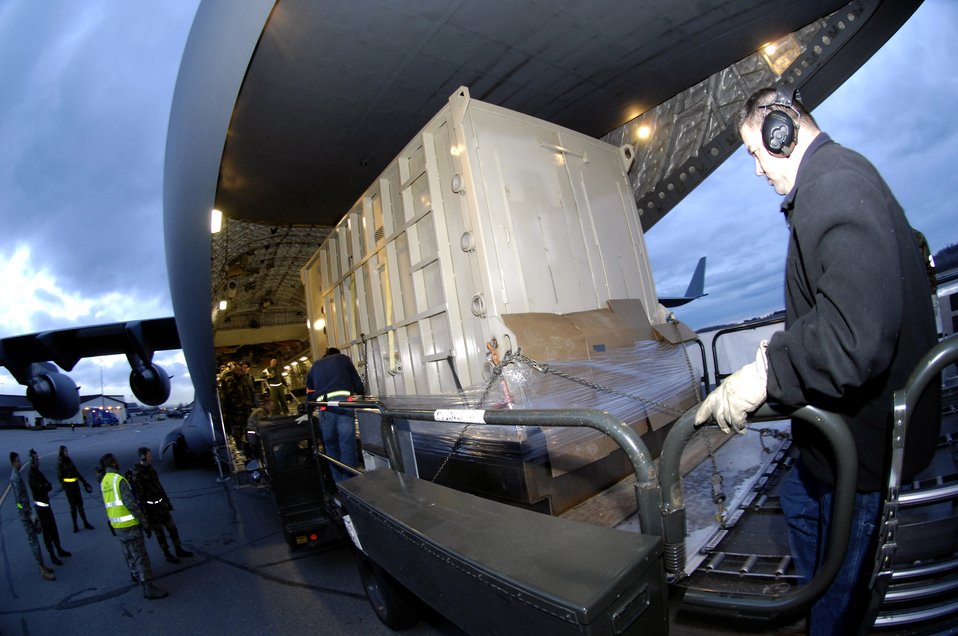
Transporting Maggie

John Bamburg operates a 60K Loader to put Maggie, an African elephant, aboard a C-17 Globemaster III Nov. 2. Maggie was transported from Elmendorf to Travis AFB, Calif. The entire operation from Alaska to her new home at the Performing Animals Welfare Society in California was expected to take approximately 12 hours.